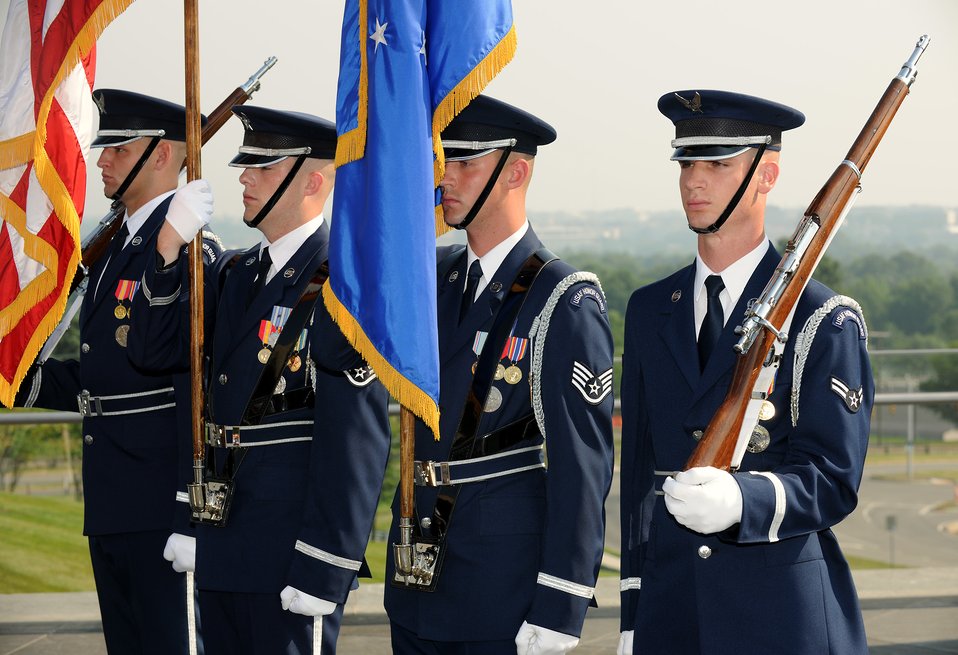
CMSAF Reads Honors Fallen on Memorial Day

The U.S. Air Force Honor Guard's color team stands at attention at a Memorial Day ceremony May 30, 2011, honoring those who gave their lives in service in the last year. The ceremony was at the Air Force Memorial in Arlington, Va., and hosted by the Air Force Association and the Air Force Sergeants' Association. During the ceremony, Chief Master Sgt. of the Air Force James Roy read the names of each of the Airmen who died in combat.